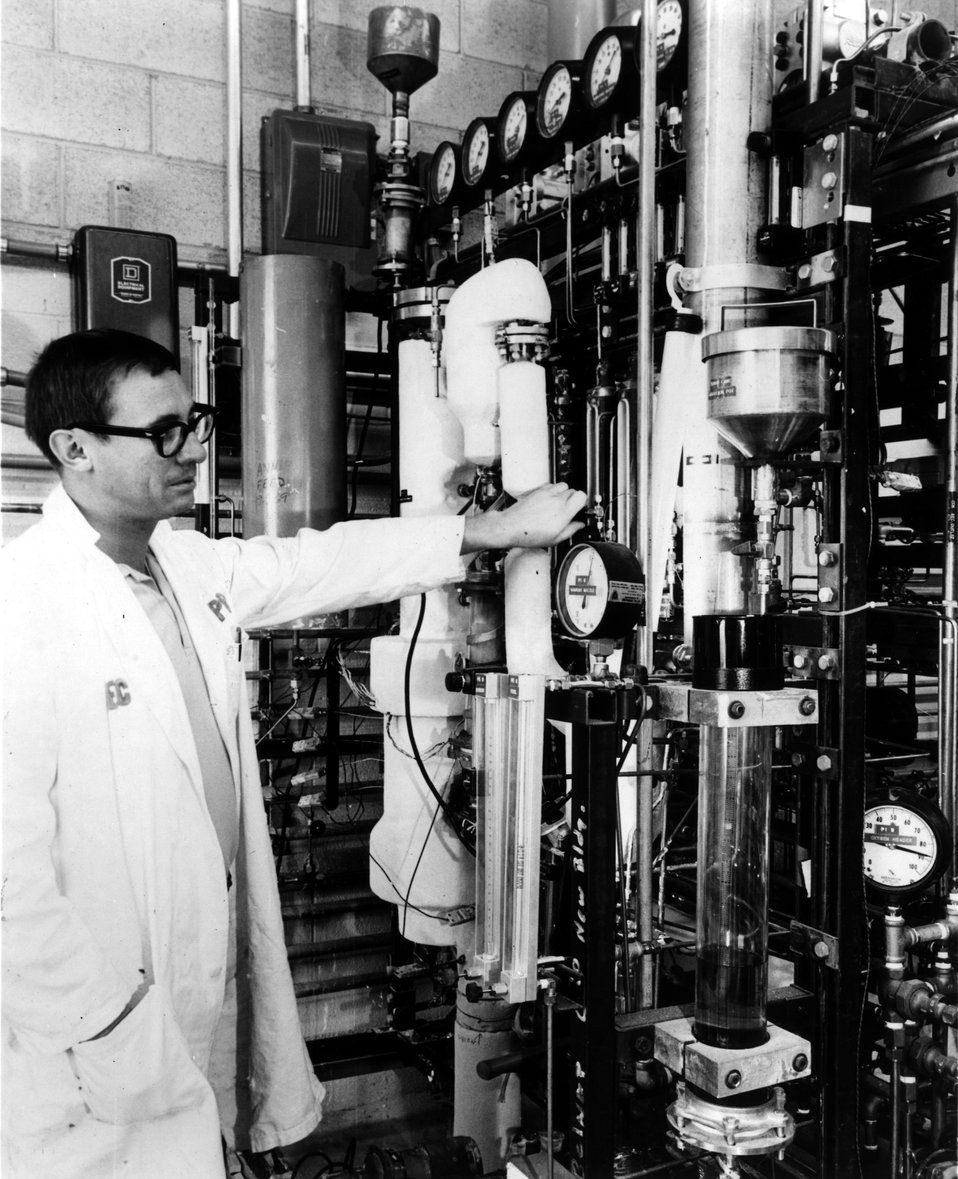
An improved system for converting highly radioactive wastes into safer, solid form is being perfected in this pilot plant equipment at the National Reactor Testing Station in Idaho. Circa 1970.